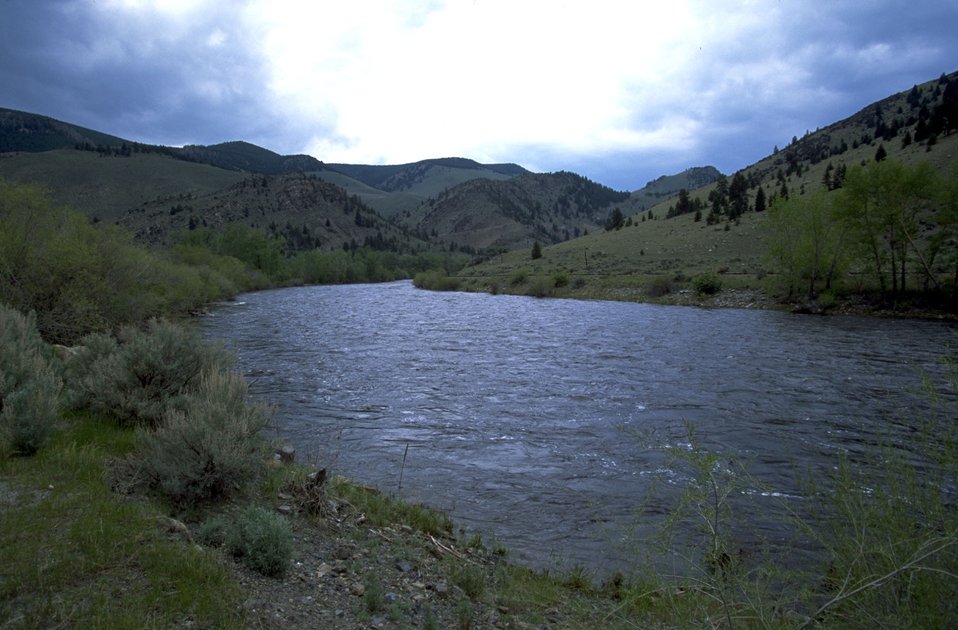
Big Hole River